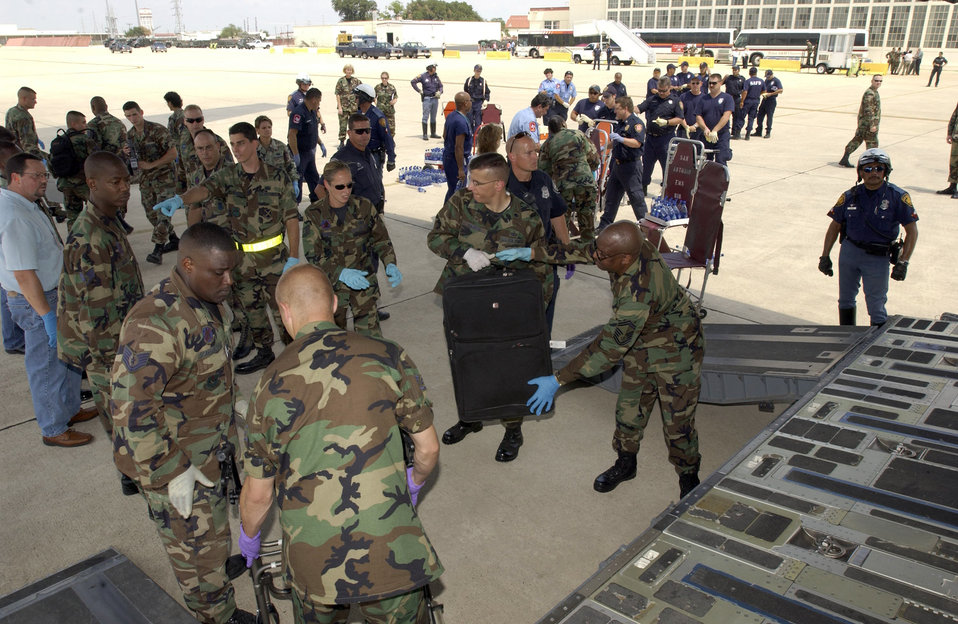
Aeromedical evacuation hub established at Lackland

LACKLAND AIR FORCE BASE, Texas -- Volunteers help Hurricane Katrina evacuees get off a C-17 Globemaster III aircraft here. The evacuees arrived Sept. 2 from New Orleans. They are being inprocessed, given a medical checkup, fed and put into temporary shelters.